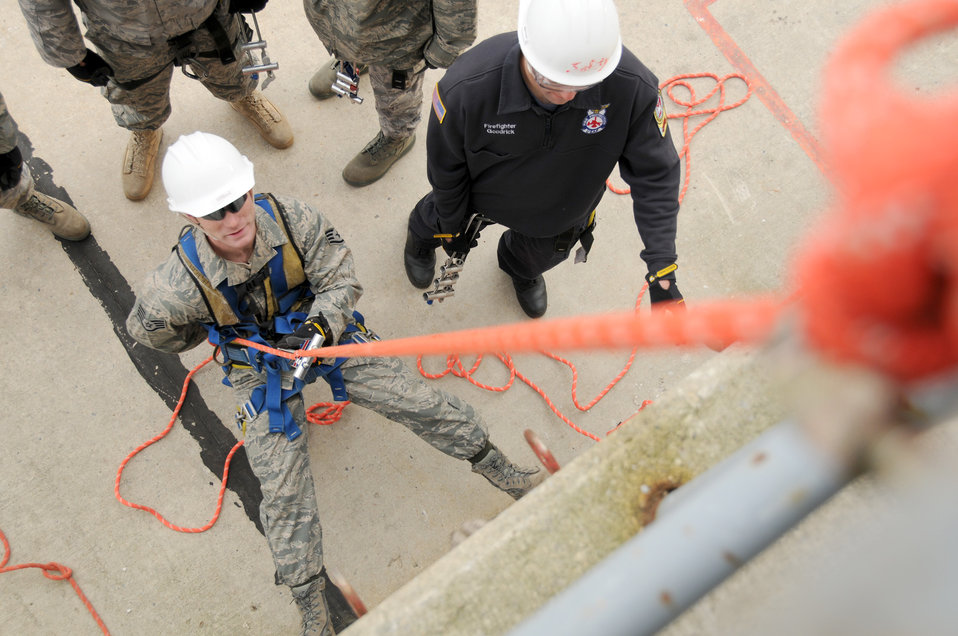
Firefighters on a training mission

Staff Sgt. David Ferguson reaches the end of the rope as he finishes rappelling a training facility Oct. 5, 2010, at the Toledo Fire and Rescue Department Training Academy in Ohio. Sergeant Ferguson is assigned to the Ohio Air National Guard's 180th Fighter Wing and is participating in six days of training designed to prepare him for various rescue situations.